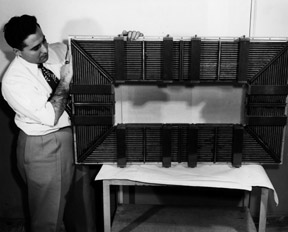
One section of core material for the fritter cavity. c. 1950